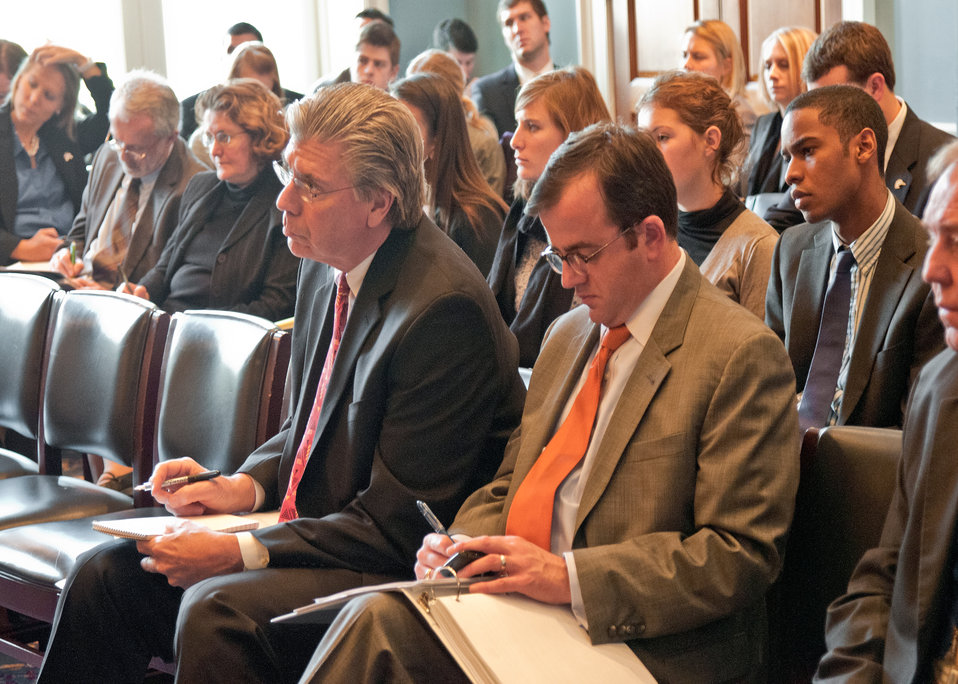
Dr. Joe Glauber, Chief Economist and John Berge, Acting, Assistant Secretary for Congressional Relations listen and take notes while Agriculture Secretary Tom Vilsack testifies during a United States Department of Agriculture budget hearing on the “State of the Ag Economy” at a House Agriculture Committee hearing in the Longworth House Office Building in Washington, D.C., Thursday, February 17, 2011.